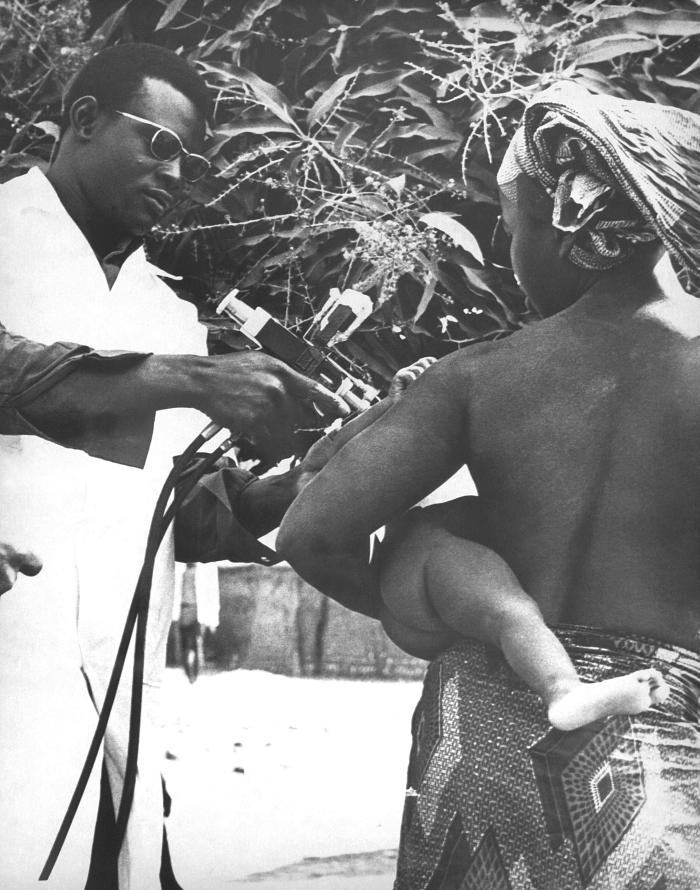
This Nigerian child is receiving a smallpox vaccination during the WHO Smallpox Eradication Project, 1968.